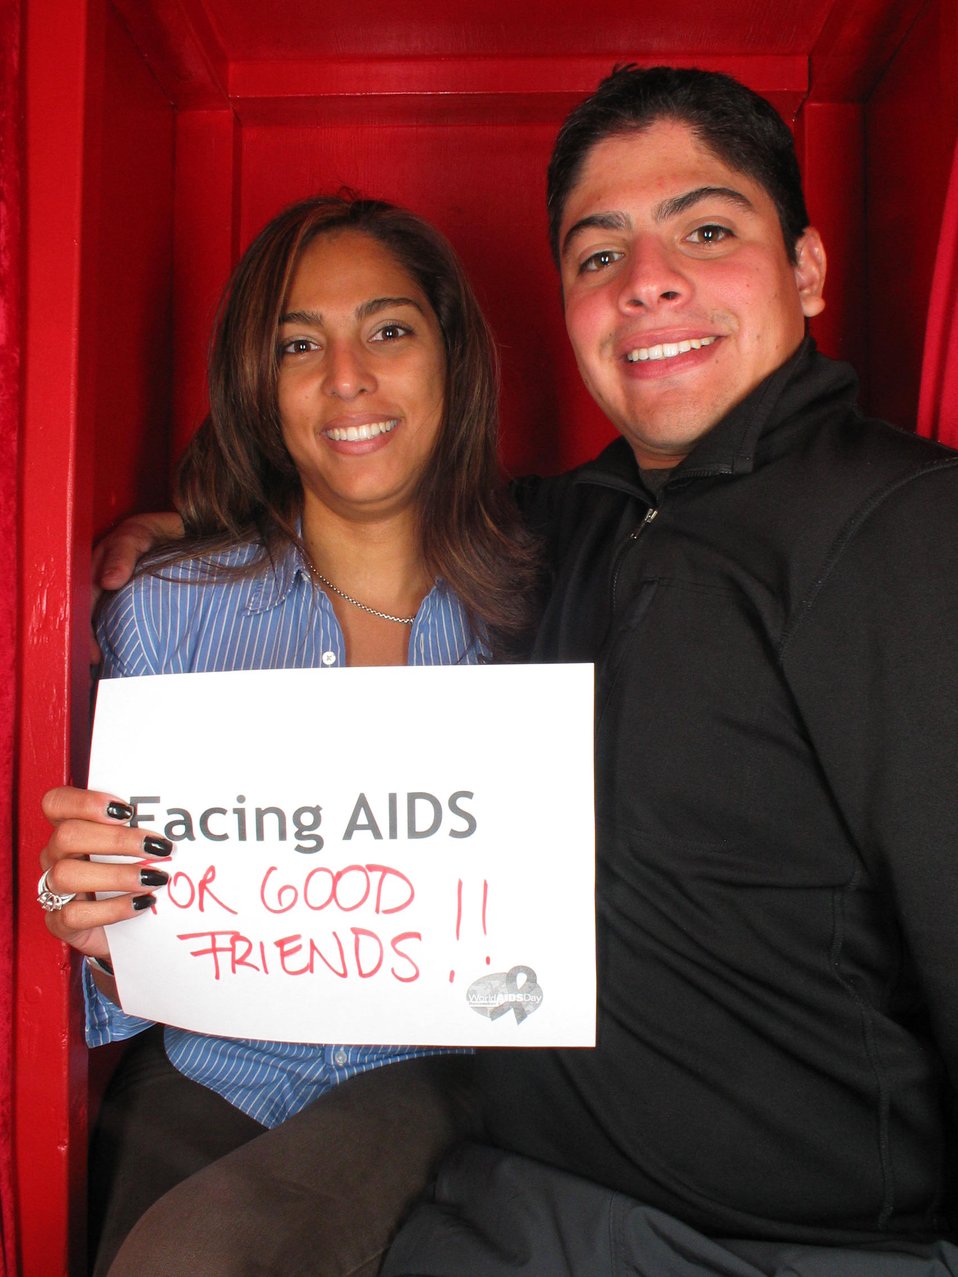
Facing AIDS for good friends!!